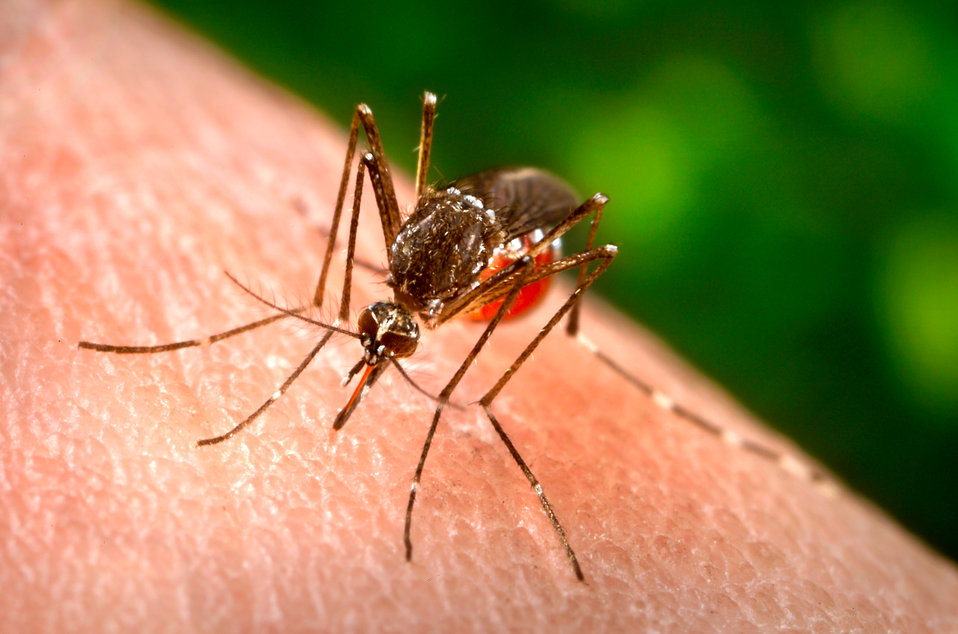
This 2006 image depicted a female Aedes aegypti mosquito as she was obtaining a blood-meal from a human host through her fascicle, which being transparent, reflected the blood's red color. In this case, what would normally be an unsuspecting host was actually the CDC's biomedical photographer's own hand, which he'd offered to the hungry mosquito so that she'd alight, and be photographed while feeding. As it filled with blood, the abdomen became distended, stretching the exterior exoskeletal surface, thereby, causing it to become transparent, allowing the collecting blood to become visible as an enlarging intra-abdominal red mass.